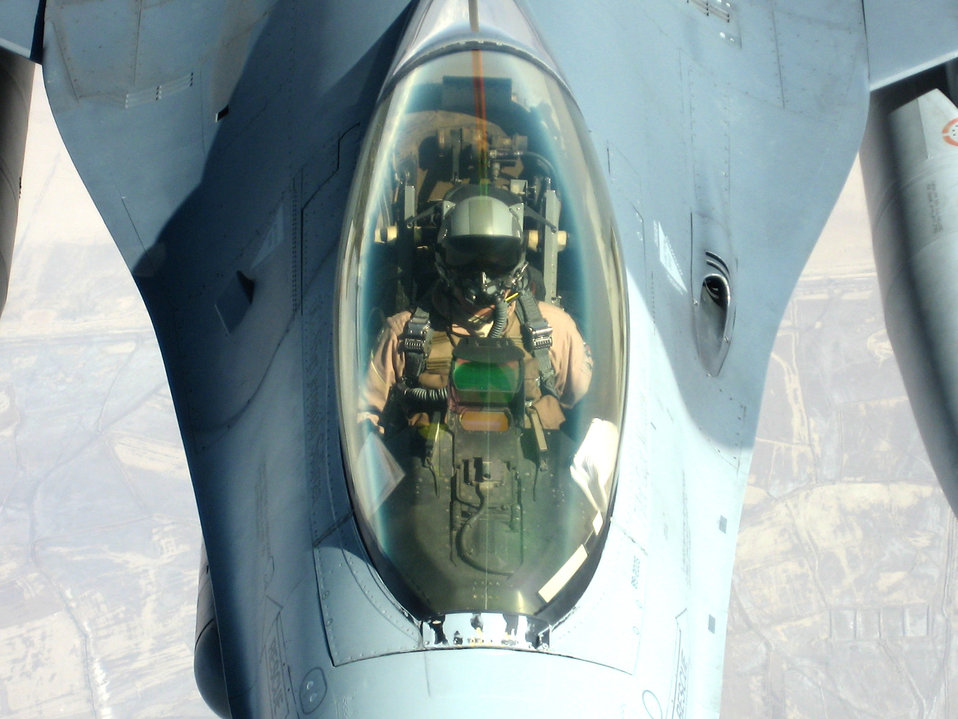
Refueling the fight

An F-16 Fighting Falcon from Balad Air Base, Iraq, takes fuel from a KC-10 Extender over Iraq Nov. 20. The KC-10 refueled two jets that afternoon in support of Operation Iraqi Freedom. The KC-10 aircrew is deployed in support of the 380th Air Expeditionary Wing.